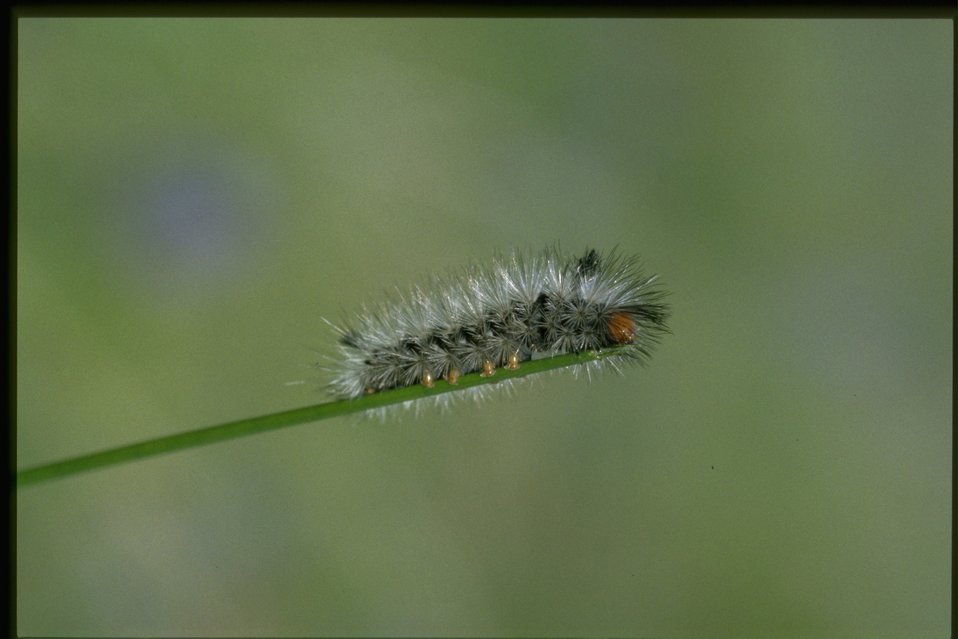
Medium shot of Caterpillar.